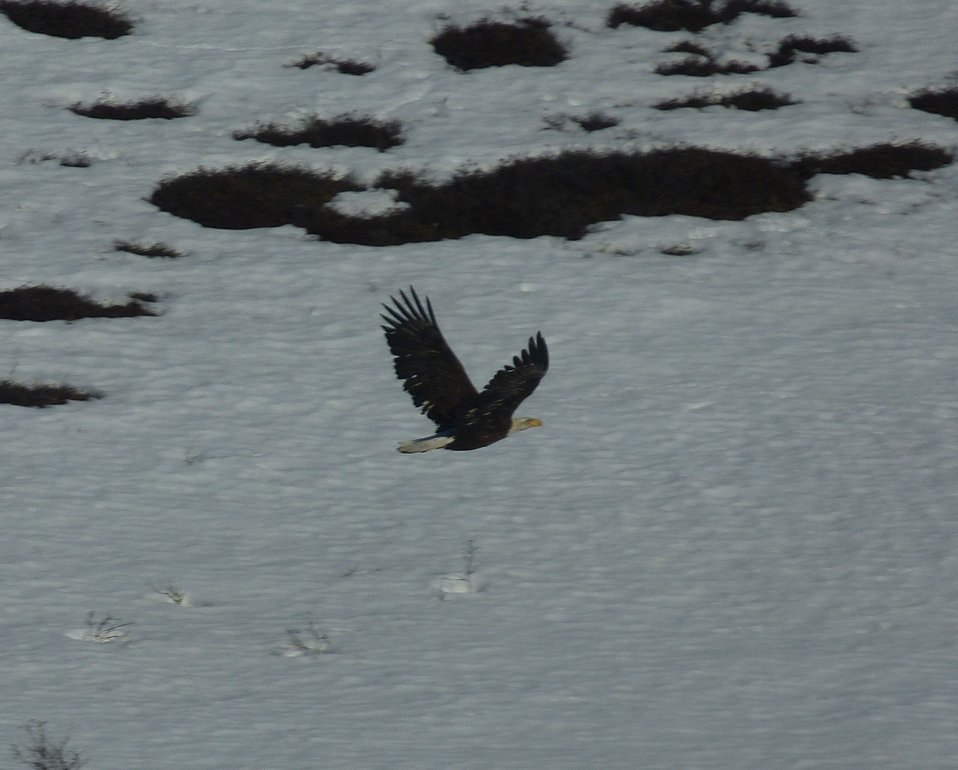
Bald Eagle KSowl

Bald Eagle, Kilbuck Mountains on Yukon Delta National Wildlife Refuge

Photo credit: Kristine Sowl,
USFWS, YDNWR